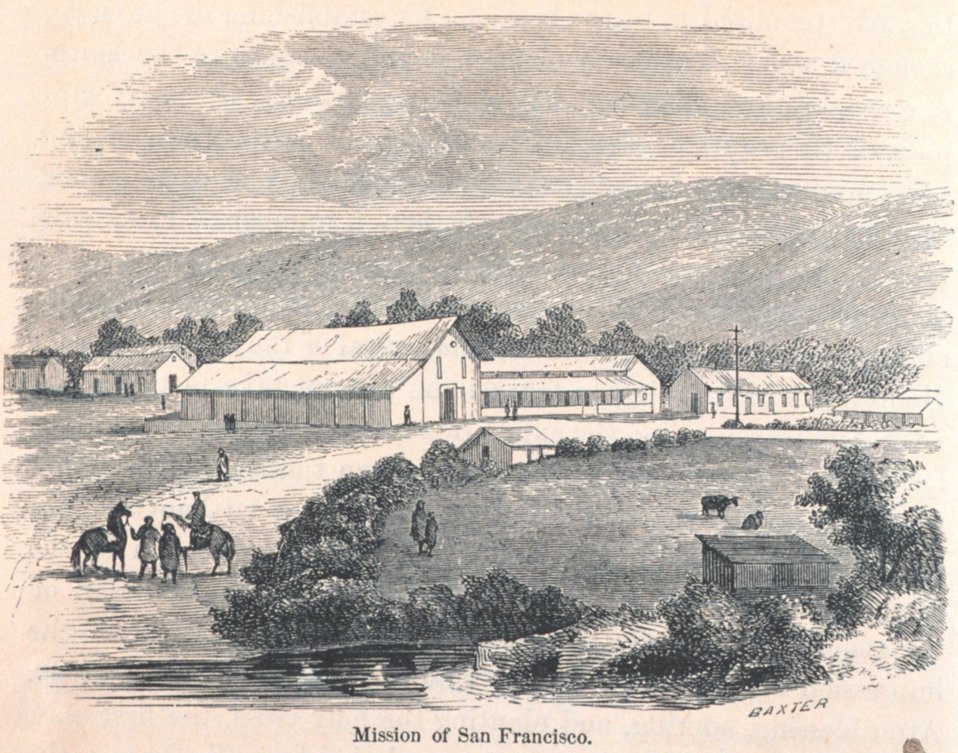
View of the Mission Dolores at San Francisco. In: 'The Annals of San Francisco'. Frank Soule, John Gihon, and James Nesbit. 1855. Page 48. D. Appleton & Company, New York. F869.S3.S7 1855.